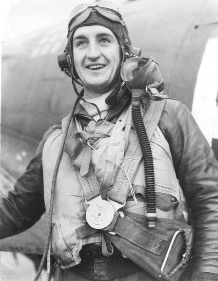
Col. Francis S. Gabreski

Col. Francis